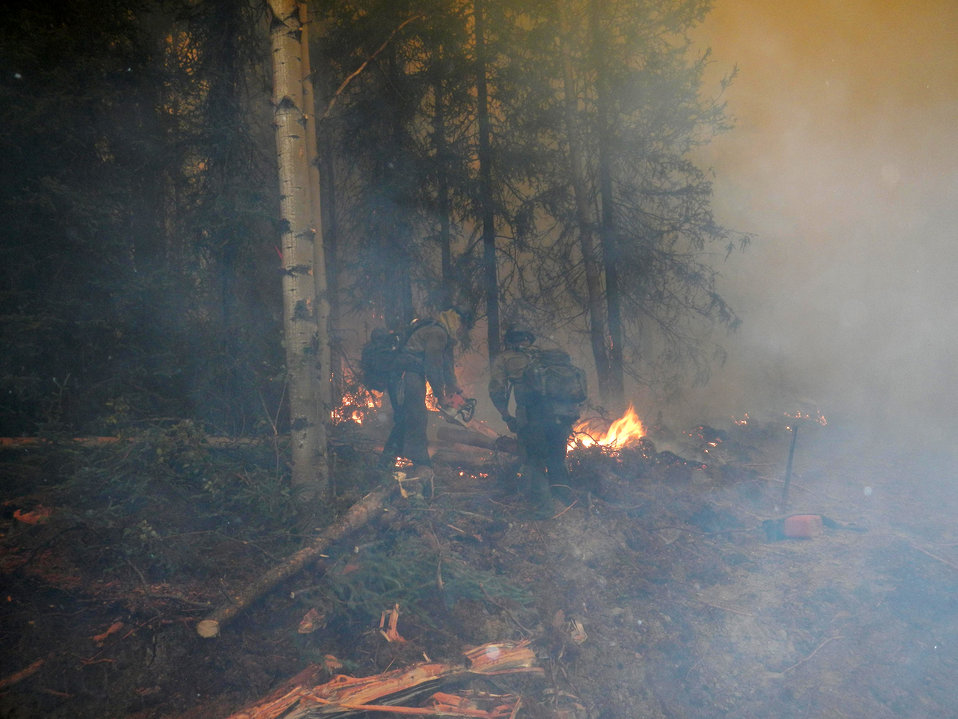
A saw crew works at the Stewart Creek Fire. The Stewart Creek Fire located 25 miles east of North Pole, AK began on Jun. 19, 2013 due to human causes and has consumed an estimated 85, 475 acres. The fire is approximately 57% contained.